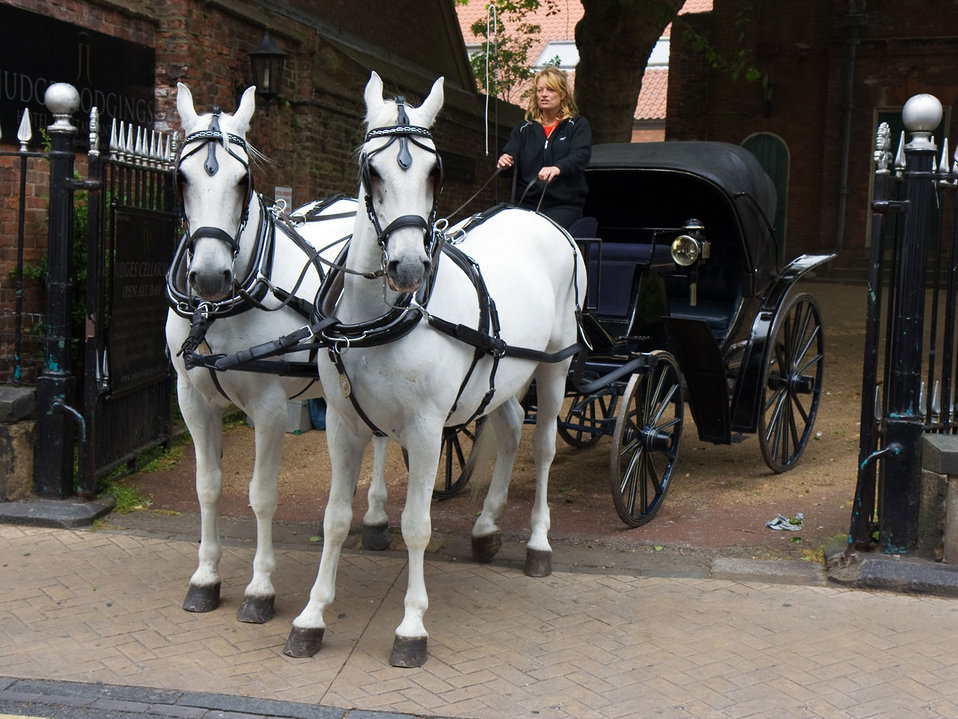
Horses

Two white horses with a carriage.